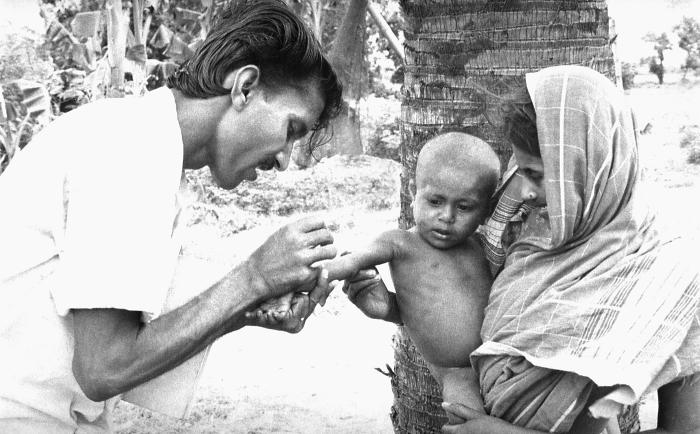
This volunteer smallpox eradication team vaccinator was in the process of administering a vaccine to a young child as his mother held him steady. Normally, individuals should not get the smallpox vaccine if they are younger than 12 months of age. However, the mantra preached by the eradication team members was 'that there was only one type of person who did not need a vaccination - a dead person'. During non-emergency smallpox scenarios, the Advisory Committee on Immunization Practices (ACIP) advises against non-emergency use of smallpox vaccine in children younger than 18 years of age.